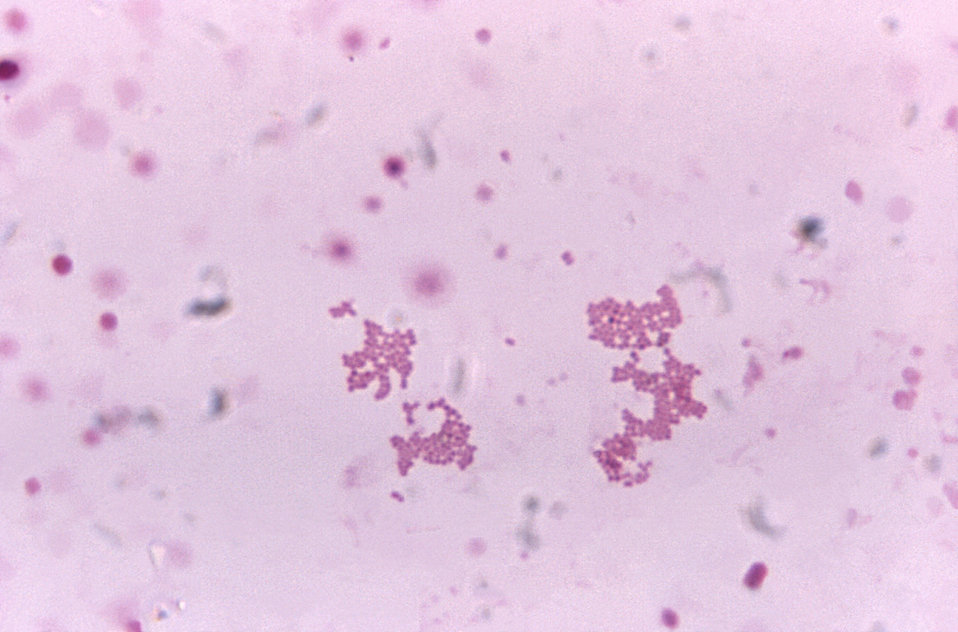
Magnified 1125X, this photomicrograph revealed the presence of numerous Gram-negative anaerobic, gram-negative cocci, i.e., round-shaped, Veillonella sp. bacteria.